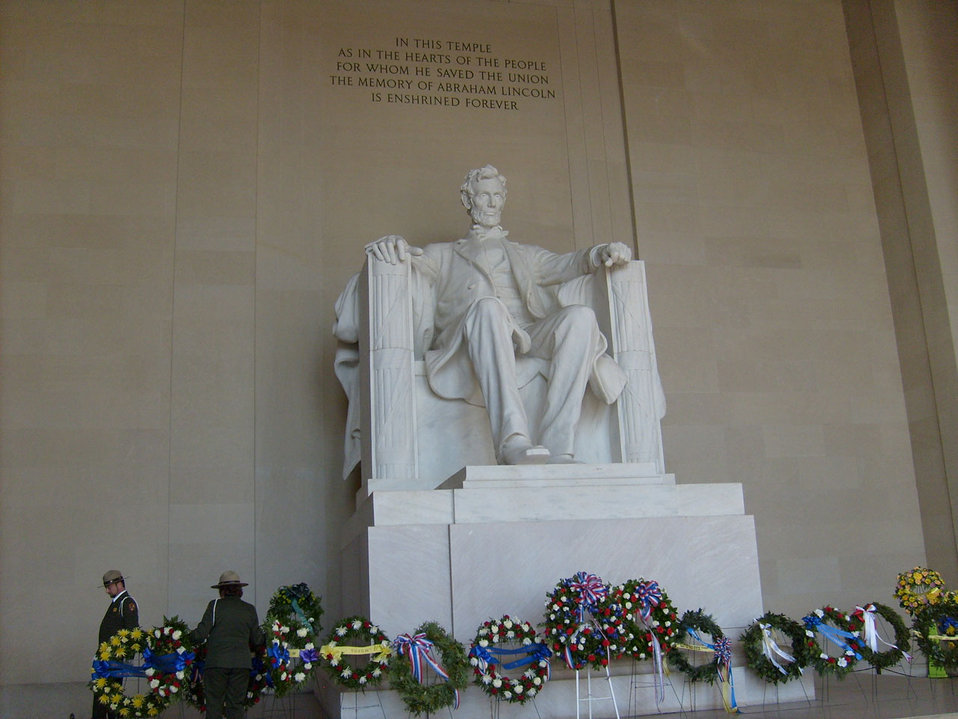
Memorial

Lincoln bicentennial birthday ceremony.